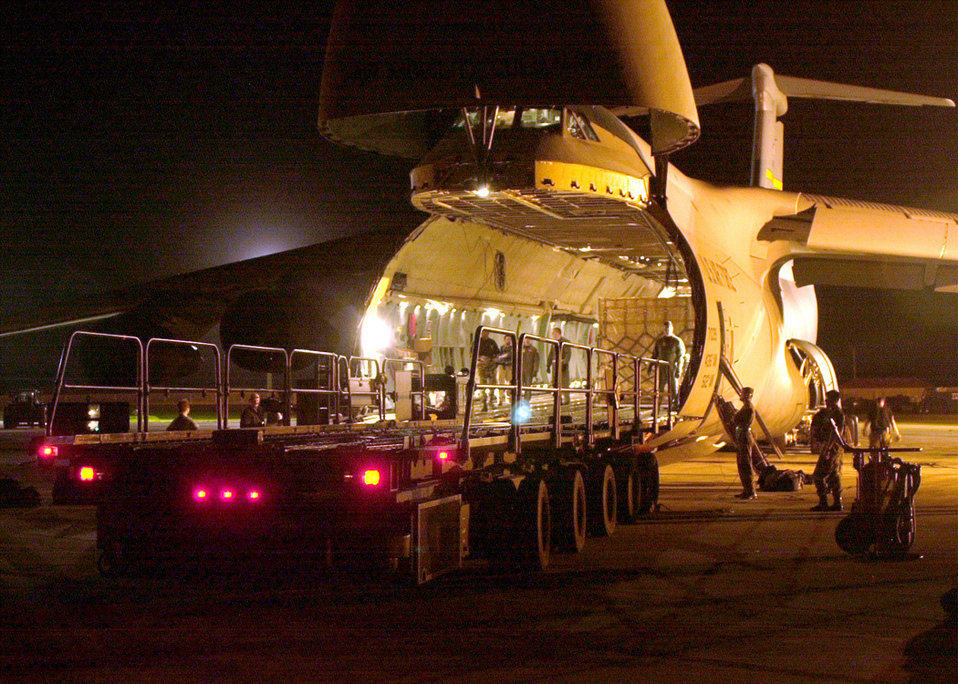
Indian earthquake relief

ANDERSEN AIR FORCE BASE, Guam -- Air Force personnel unload relief supplies destined for earthquake victims in India from a C-5A Galaxy here, on Feb. 3, 2001. Tons of relief supplies are being flown to Andersen where they will be loaded onto C-17 Globemaster III aircraft for transport to India to aid victims of the Jan. 26 earthquake.